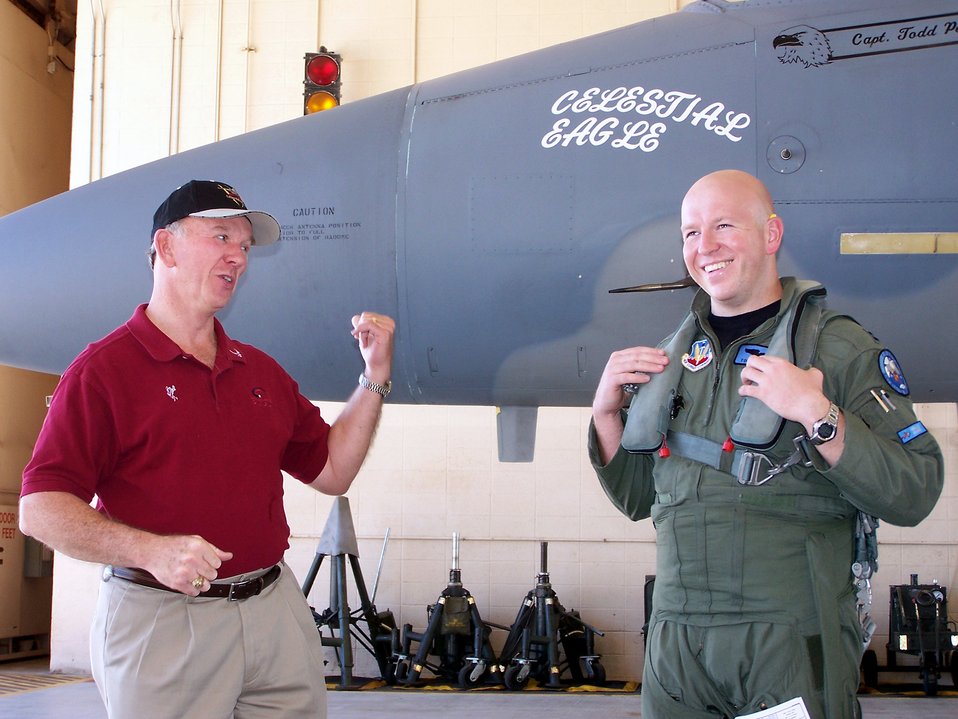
Celestial Eagle: Historic anti-satellite mission remembered

Retired Maj. Gen. Doug Pearson (left) and Capt. Todd Pearson, a 390th Fighter Squadron pilot from Mountain Home Air Force Base, Idaho, joke around Sept. 13 prior to Captain Pearson taking off on the Celestial Eagle remembrance flight at Homestead Air Reserve Base, Fla. General Pearson flew the exact same F-15 Eagle, now assigned to the Florida Air National Guard 125th Fighter Wing, exactly 22 years prior while accomplishing the only successful satellite kill by an aircraft launched missile in history.